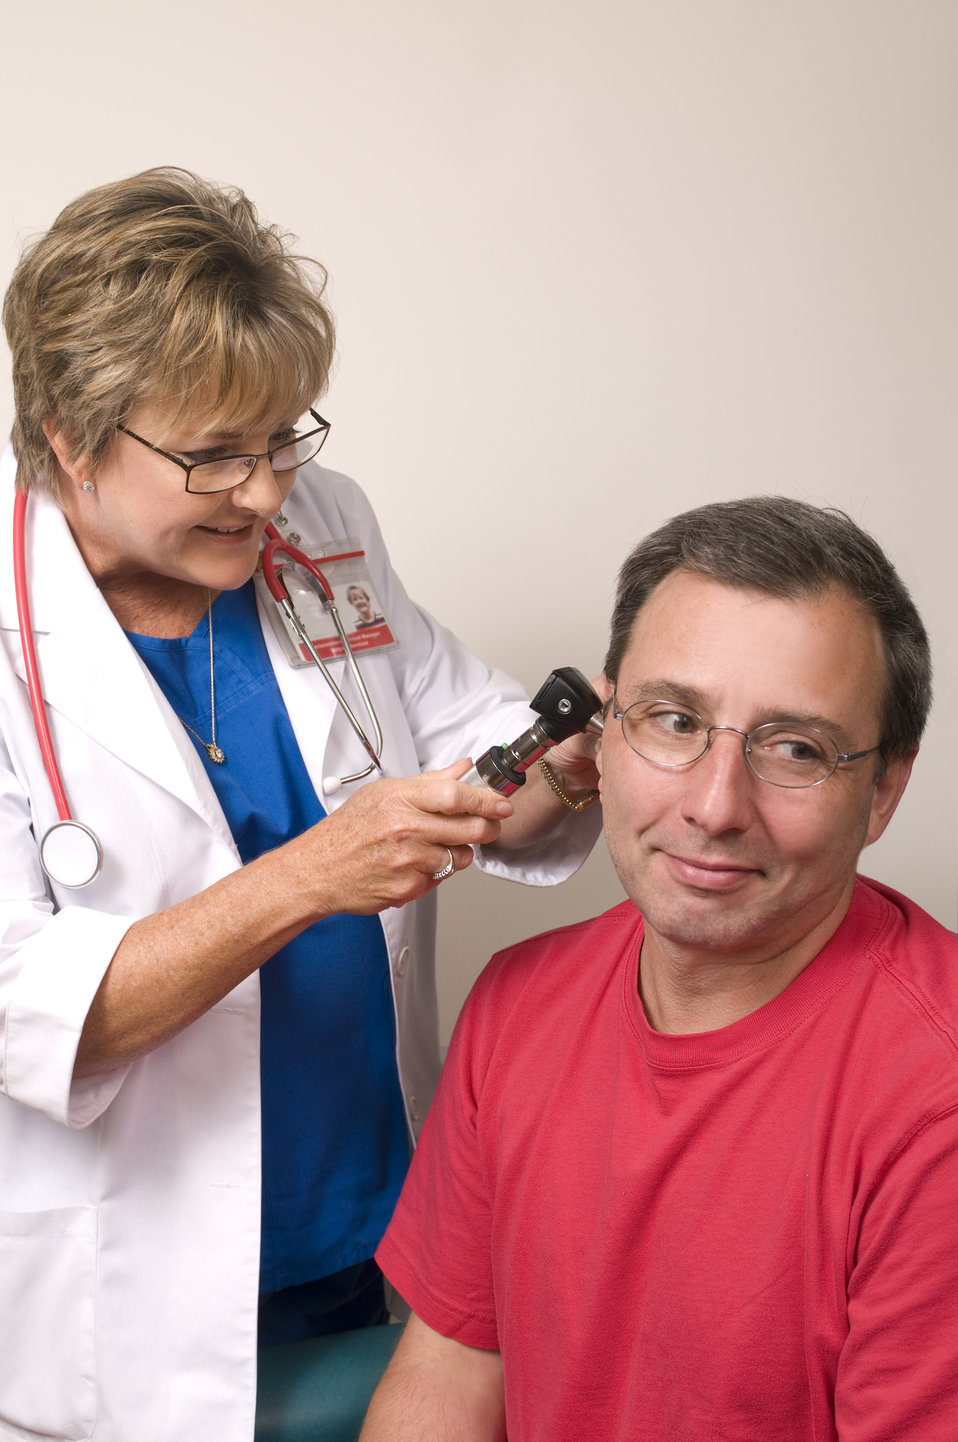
This image depicts a female clinician conducting an examination of a male patient's right ear, using an otoscope, which she'd inserted into the right ear canal.